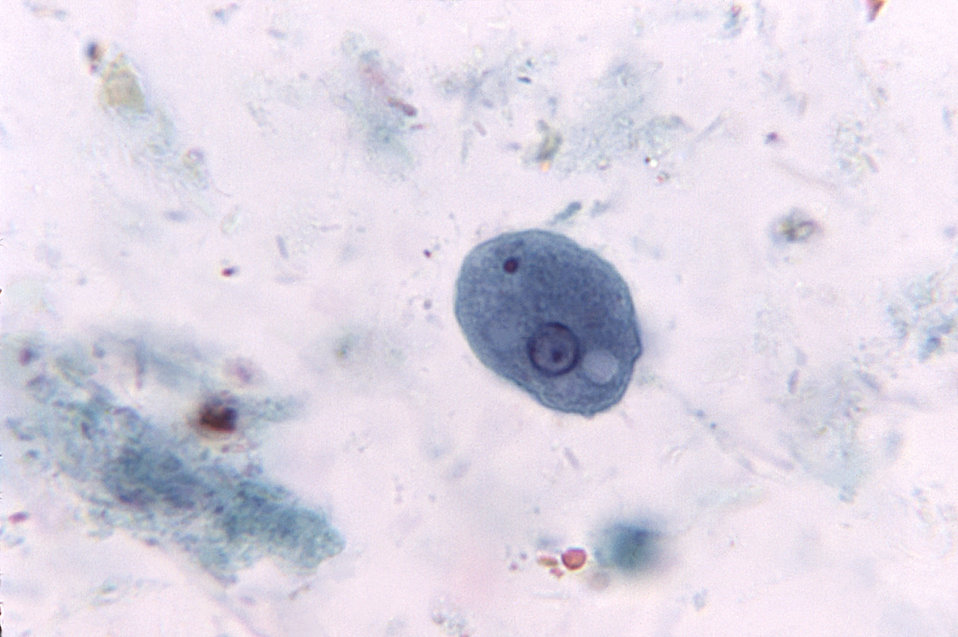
Entamoeba coli trophozoite with ingested bacteria. Parasite, ameba.